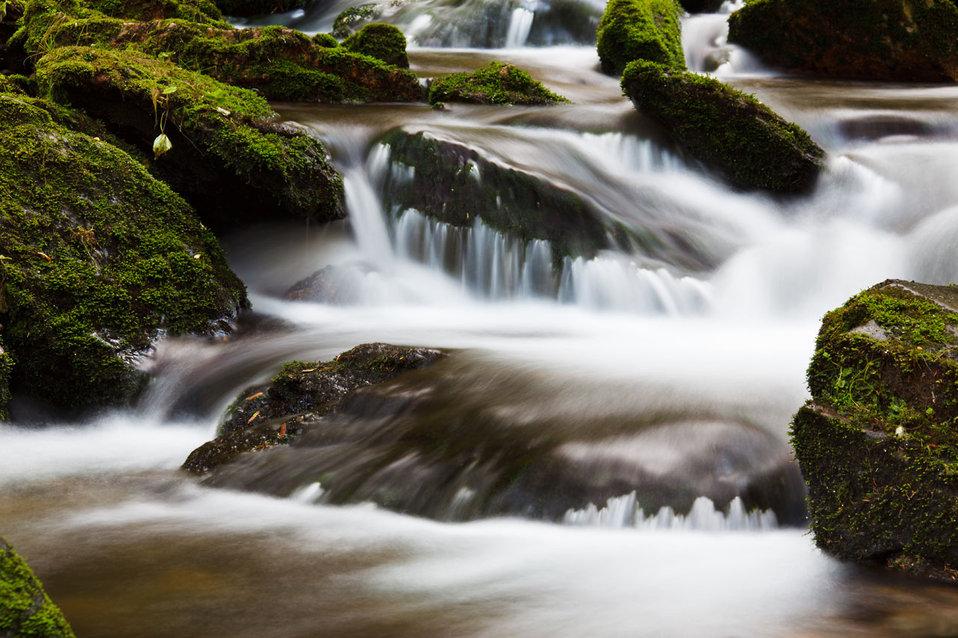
Blurred water effect done by long exposure. picture of a stream on bila opava walk in czech republic.